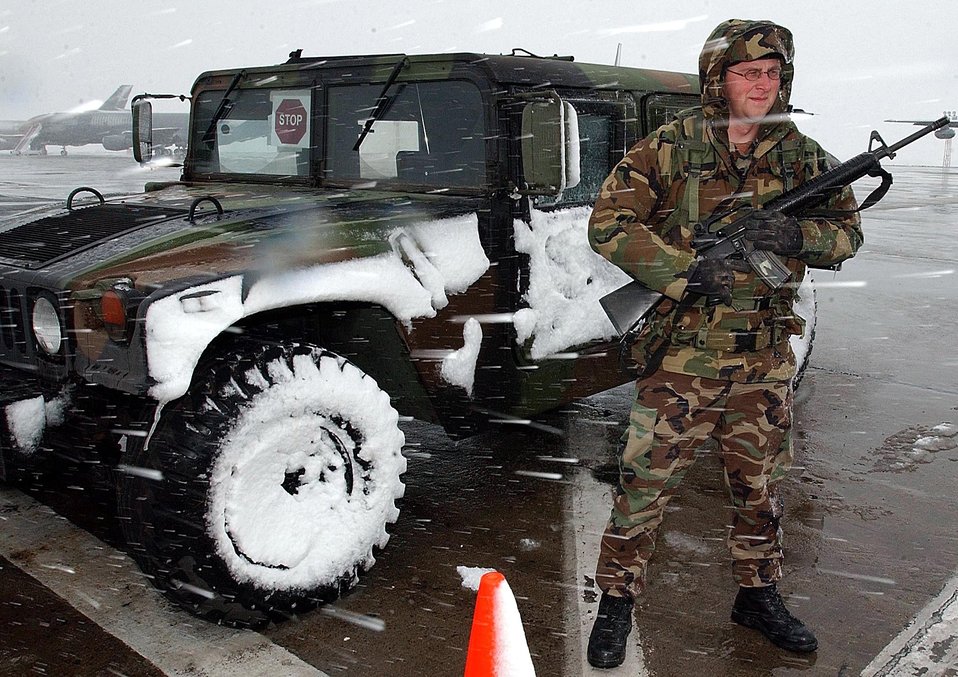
Chilly sentry

CAMP SARAFOVO, Bulgaria -- Senior Airman Josh Swisher guards the entry control point to the KC-10 Extender parking area here. The camp is home to the 409th Air Expeditionary Group, which is flying air refueling operations supporting Operation Iraqi Freedom. Swisher is assigned to the 409th Air Expeditionary Group here.